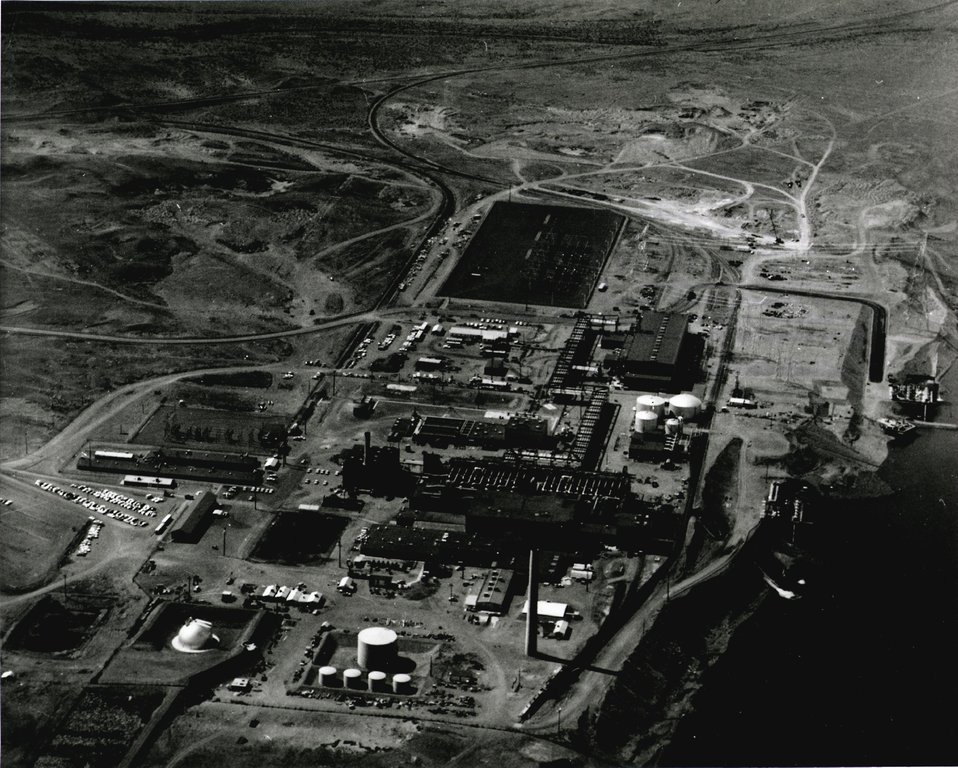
The world's largest 'dual-purpose' nuclear facility, at the Atomic Energy Commission's Hanford Project, is shown in this aerial picture. The 'N-Reactor' produces plutonium for the nation's nuclear arsenal and steam which is used to produce power in a facility owned and operated by a group of public utilities.